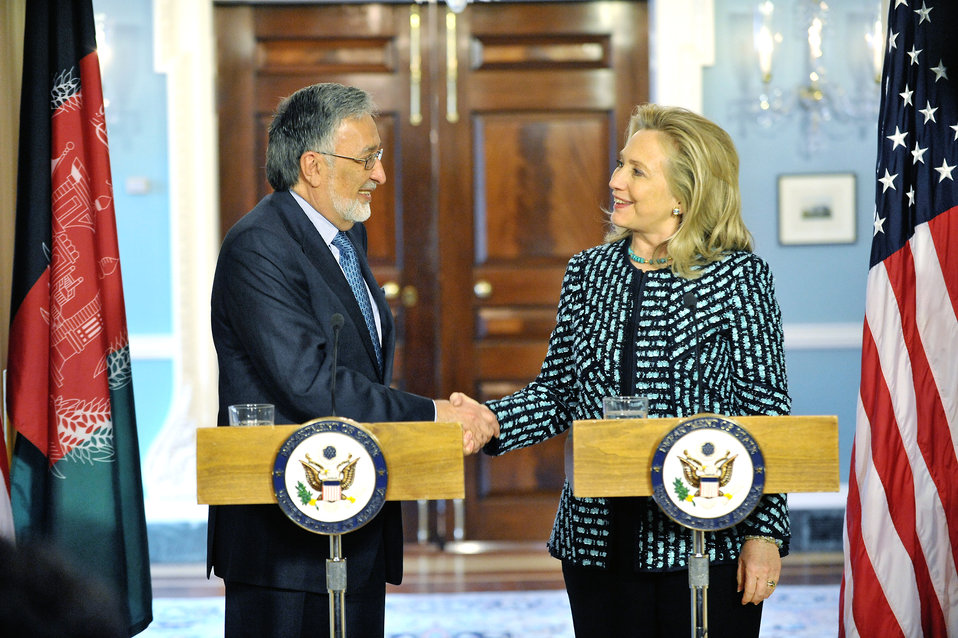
Secretary Clinton Delivers Remarks With Afghanistan Foreign Minister Rassoul

U.S. Secretary of State Hillary Rodham Clinton delivers remarks with Afghanistan Foreign Minister Zalmai Rassoul at the Department of State in Washington, D.C. on March 21, 2012.